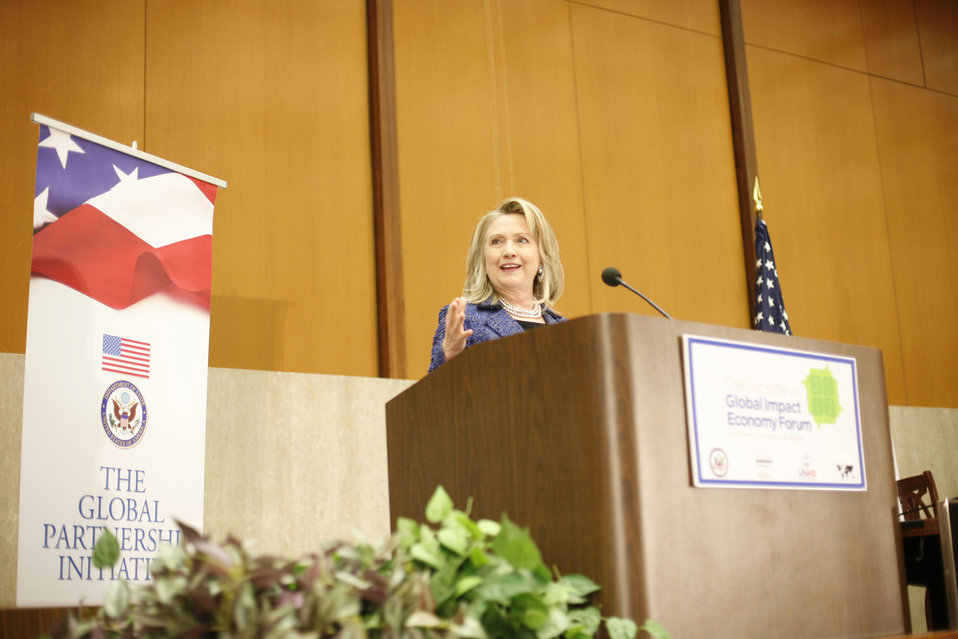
Secretary Clinton Delivers Remarks

U.S. Secretary of State Hillary Rodham Clinton delivers remarks at the first-ever Global Impact Economy Forum at the U.S. Department of State in Washington, D.C., on April 26, 2012.